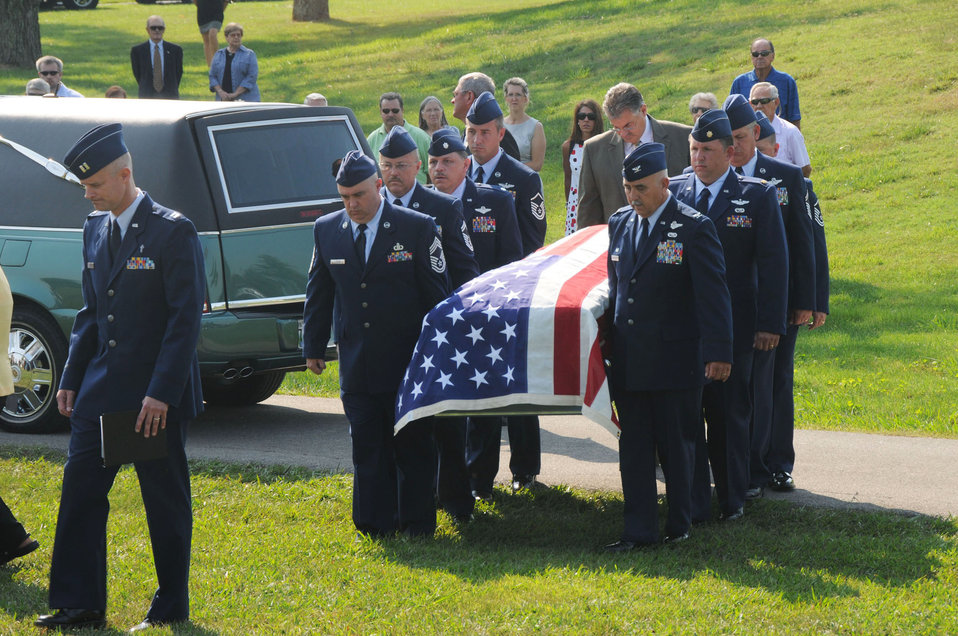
Remembering a fallen hero

Members of the Tennessee Air National Guard's 134th Air Refueling Wing carry the remains of Senior Master Sgt. Mike Buckner June 4, 2011. Sergeant Buckner was a member of the 134th ARW. He died May 30, 2011.